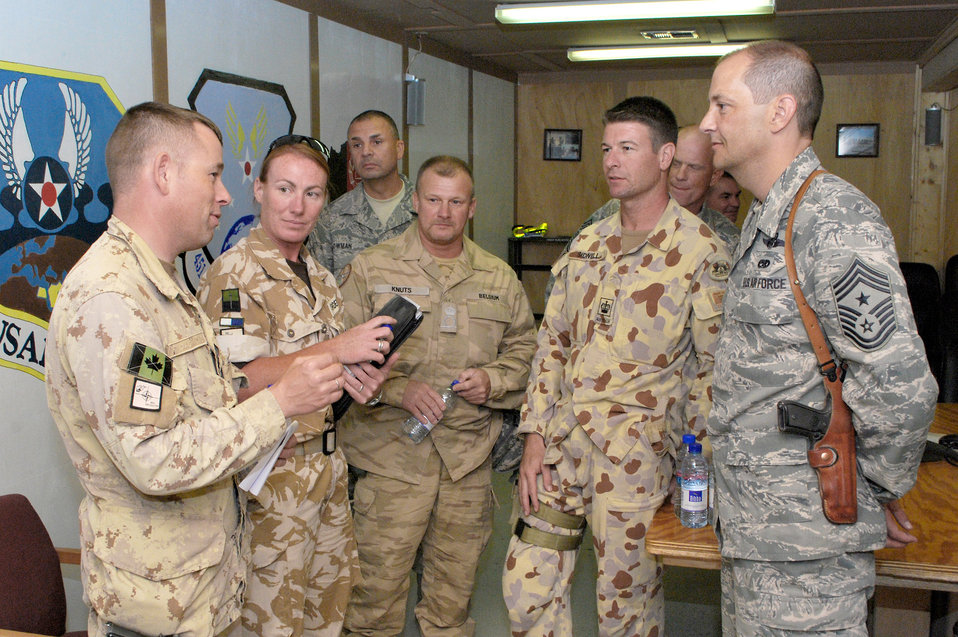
NATO SNCO panel

NATO partner military members and Airmen mingle after a senior NCO panel discussion Oct. 13, 2010, at Kandahar Airfield, Afghanistan. The Air Force SNCOs hosted the NATO members to increase awareness of other nations' military standards, customs and courtesies and traditions.